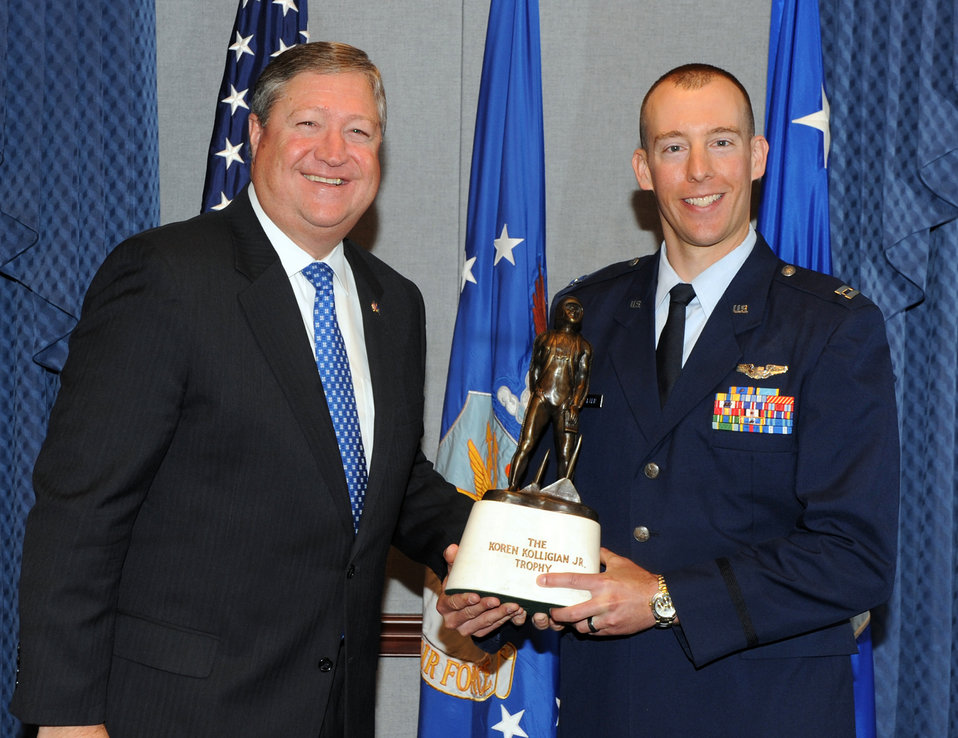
2011 Kolligian Trophy

Secretary of the Air Force Michael Donley presents Capt. Hans Buckwalter with the 2010 Koren Kolligian Jr. Trophy June 29, 2011, during a ceremony in the Pentagon.